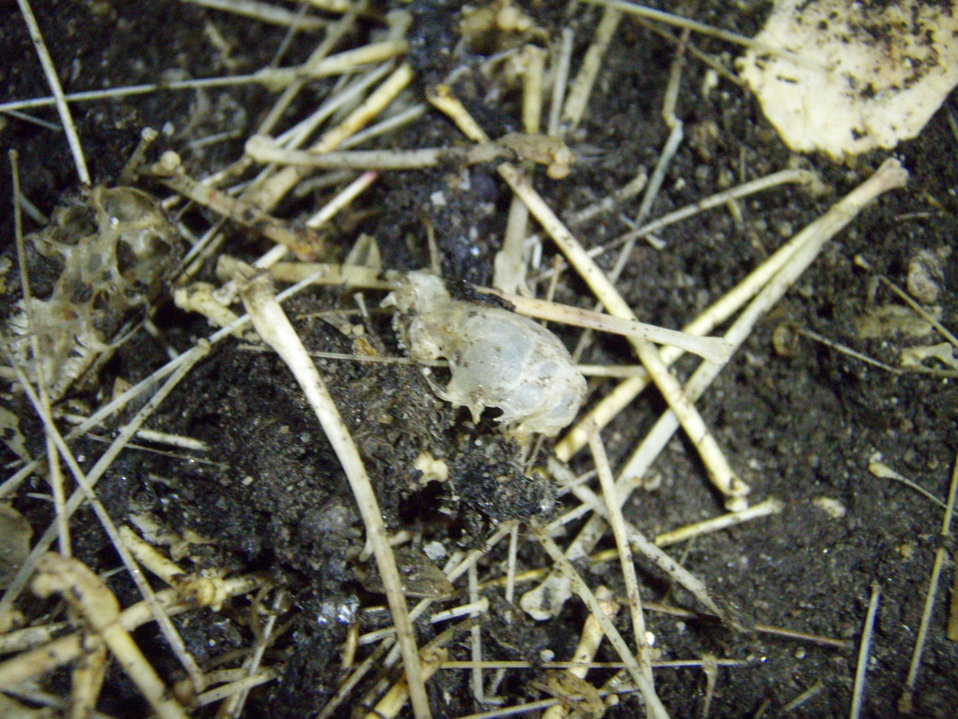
Bat skulls and bones litter the floor of Aeolus Cave, a WNS site in Vermont.